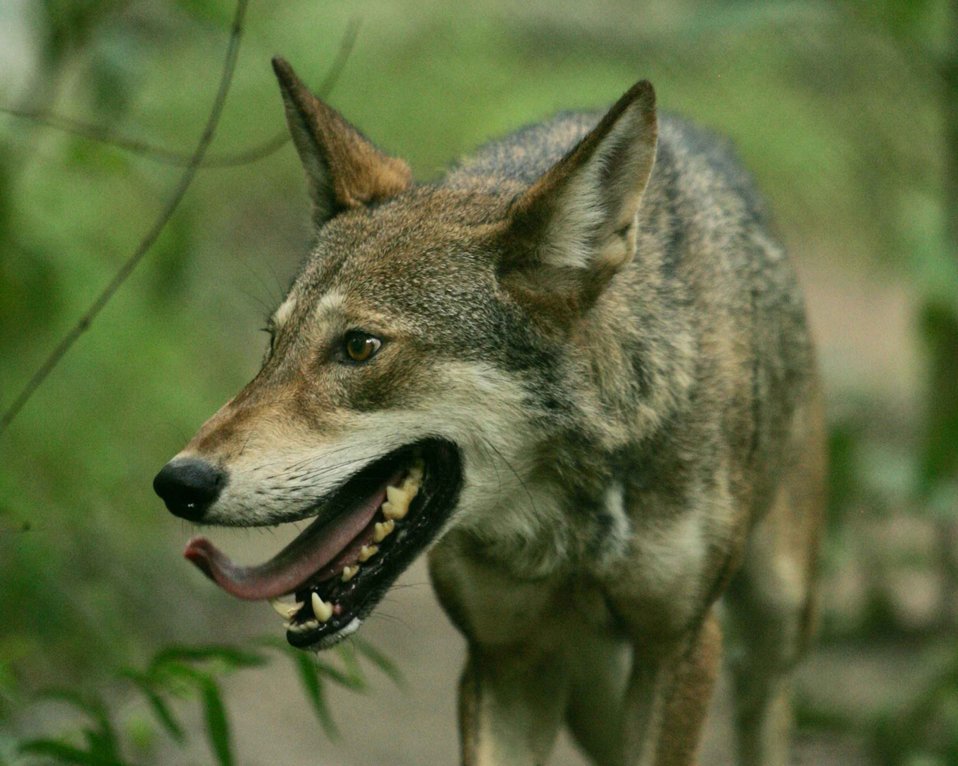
English:
Image title: Wonderful close shot of the beautiful red wolf canis rufus Image from Public domain images website, http://www.public-domain-image.com/full-image/fauna-animals-public-domain-images-pictures/foxes-and-wolves-public-domain-images-pictures/wonderful-close-shot-of-the-beautiful-red-wolf-canis-rufus.jpg.html